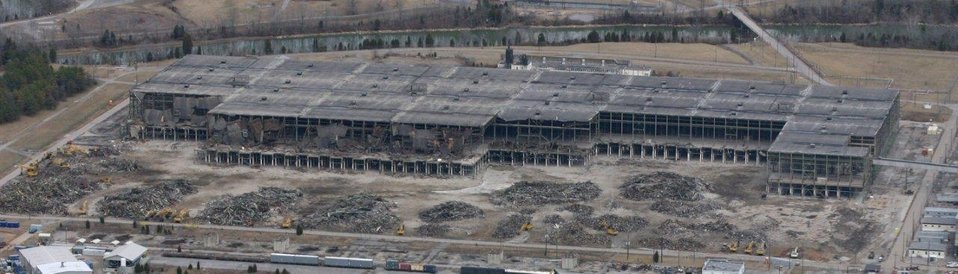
Oak Ridge Stays on Course for Recovery Act Completion in September

Recovery Act funding has accelerated cleanup, created and saved jobs, significantly reduced the Cold War footprint, and helped Oak Ridge meet regulatory commitments involving soil and groundwater remediation.